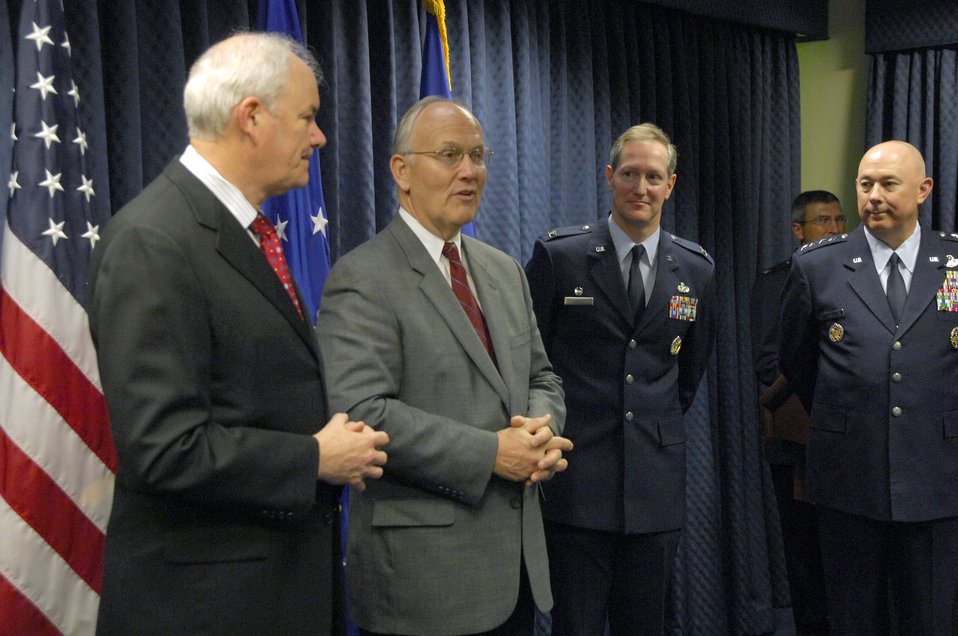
Mountain Home awarded $1 million for Air Force excellence

Secretary of the Air Force Michael Wynne, Idaho senator Larry Craig, 366th Mission Support Group commander Col.Tom Laffey and Air Force Chief of Staff T. Michael Moseley gather for opening remarks May 3 prior to the presentation of the 2007 Installation Excellence Award to Mountain Home AFB, Idaho at the Pentagon in Washington, D.C. Standing out among the many great improvements made on the base was their robust energy program where they installed new boilers in multiple facilities, reducing heating costs by $1.2 million and later renegotiated natural gas rates, which slashed costs 24 percent, which in trn saved the base $800,000.